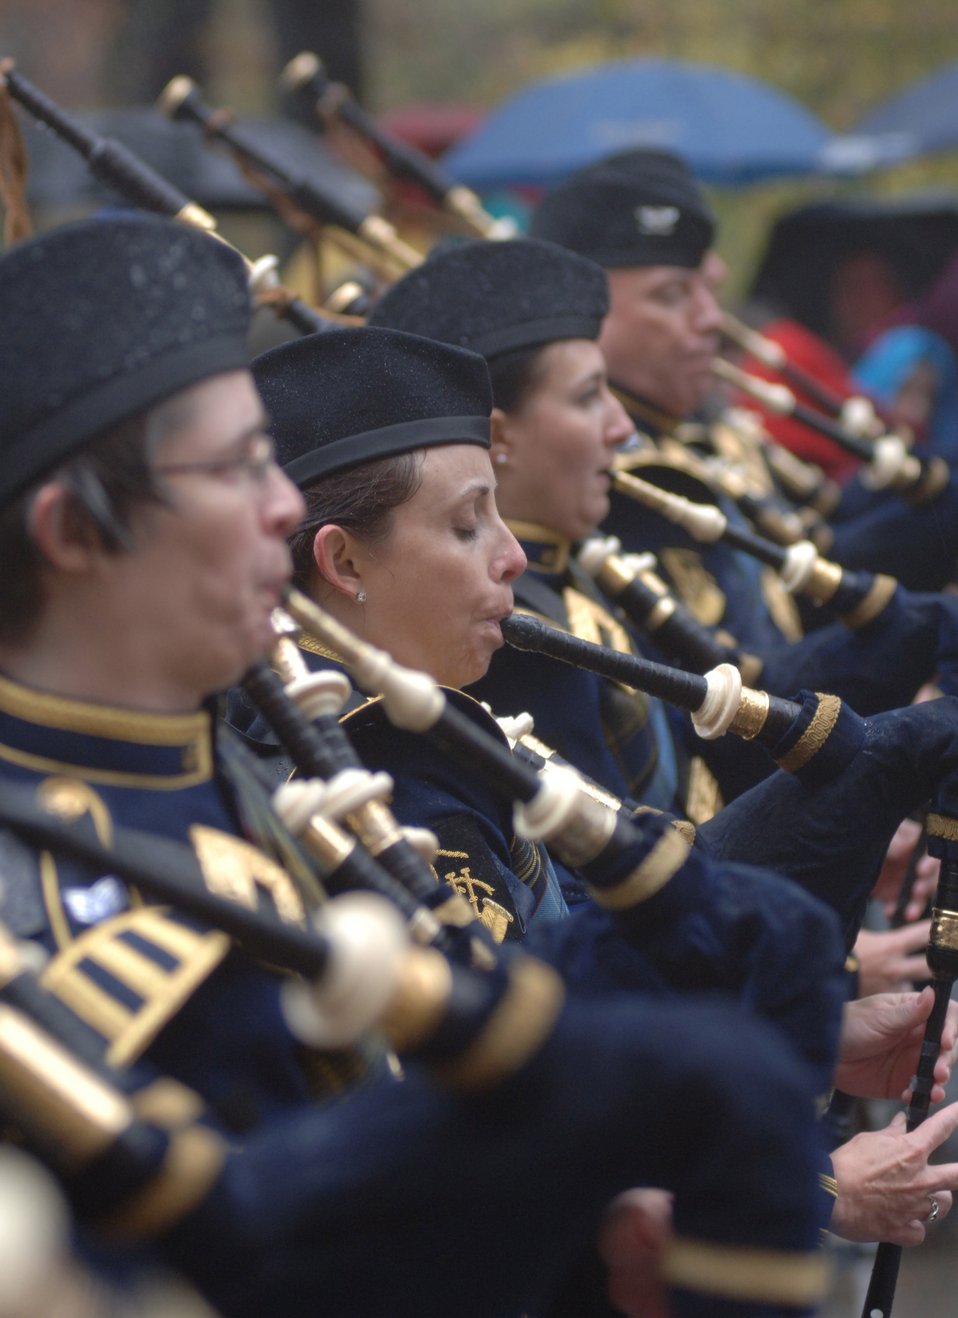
Academy band spreads news in Big Apple

The Air Force Reserve Pipe Band marched with the U.S. Air Force Academy Band in the Macy's Thanksgiving Day Parade Nov. 23 in New York City despite heavy rains and near-freezing temperatures. Between two major networks the Macy's parade reaches an estimated 55 million people worldwide. The appearance was part of a five-day tour by the academy band, accompanied by the cadet chorale and falconers, in which it had five national television appearances.